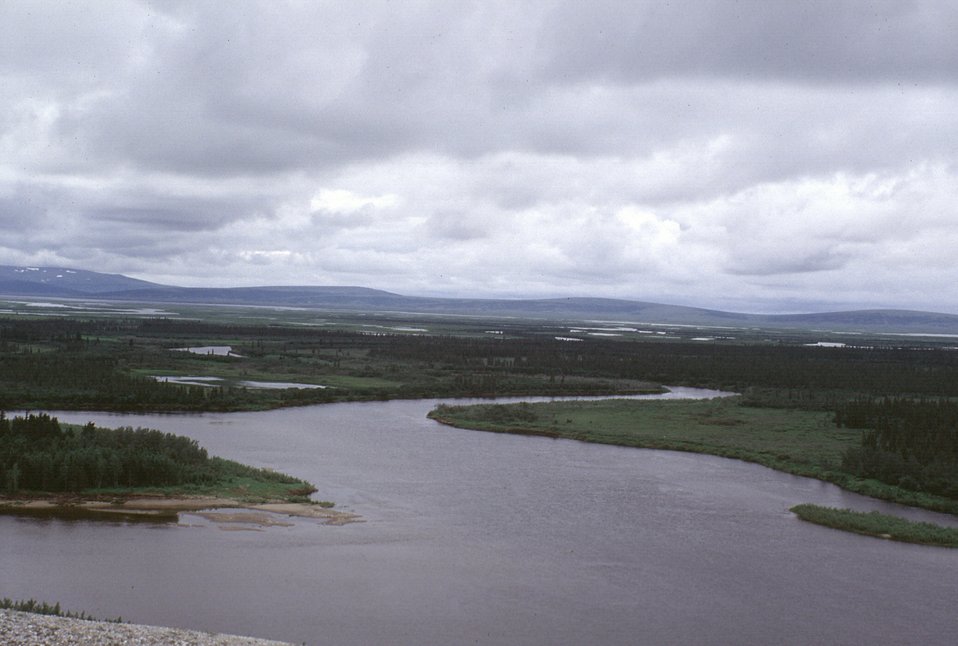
White Mountain